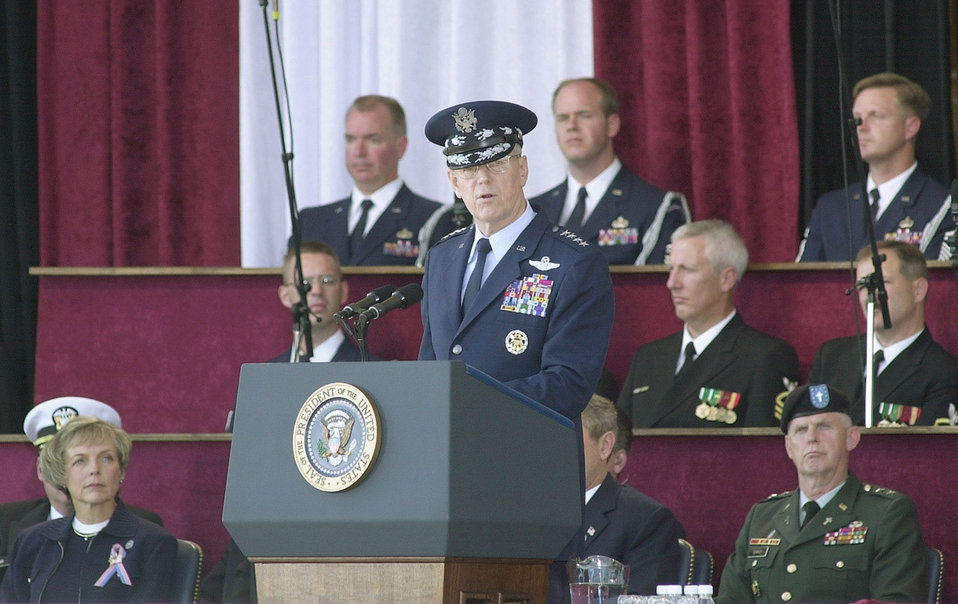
Myers

WASHINGTON -- Chairman of the Joint Chiefs of Staff, Gen. Richard B. Myers, addresses the more than 20,000 people attending a ceremony, held on the Pentagon Parade Ground Oct. 11, to remember those killed in the Sept. 11, terrorist attack at the Pentagon.